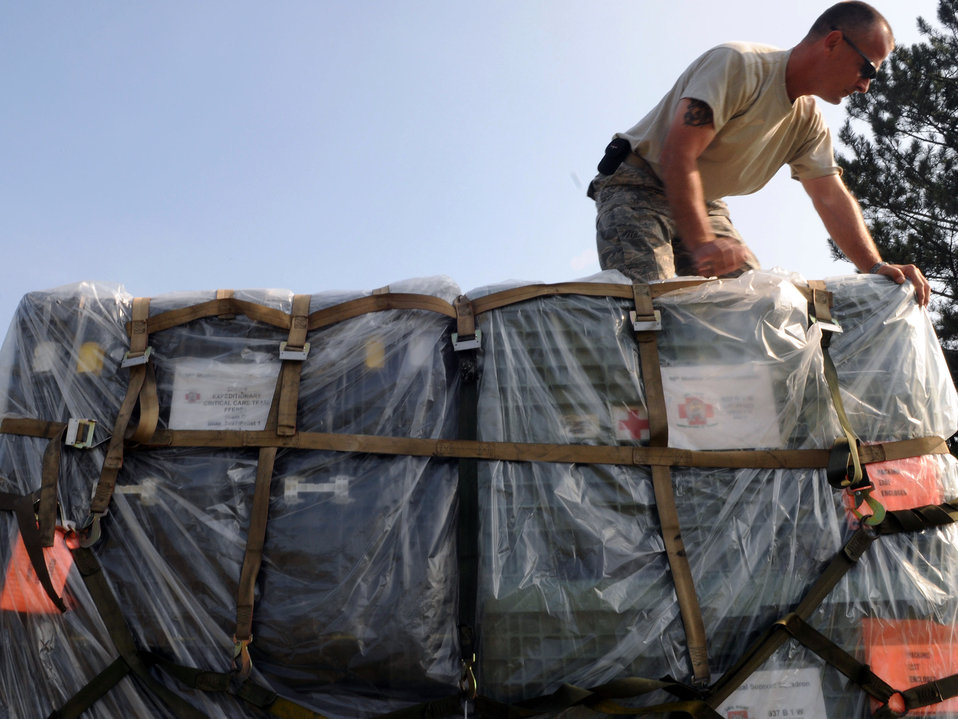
Airmen stand up medical squadron to support training exercise

Master Sgt. Robert Janas helps unpack medical supplies for a mobile hospital Sept. 1, 2009, in Nis, Serbia. The exercise, hosted by Serbia, provides a joint medical learning environment and assists host nation civilian and military services; international, private and volunteer organizations; and other participating nations in enhancing disaster response actions. Sergeant Janas is assigned to the 458th Expeditionary Medical Squadron.